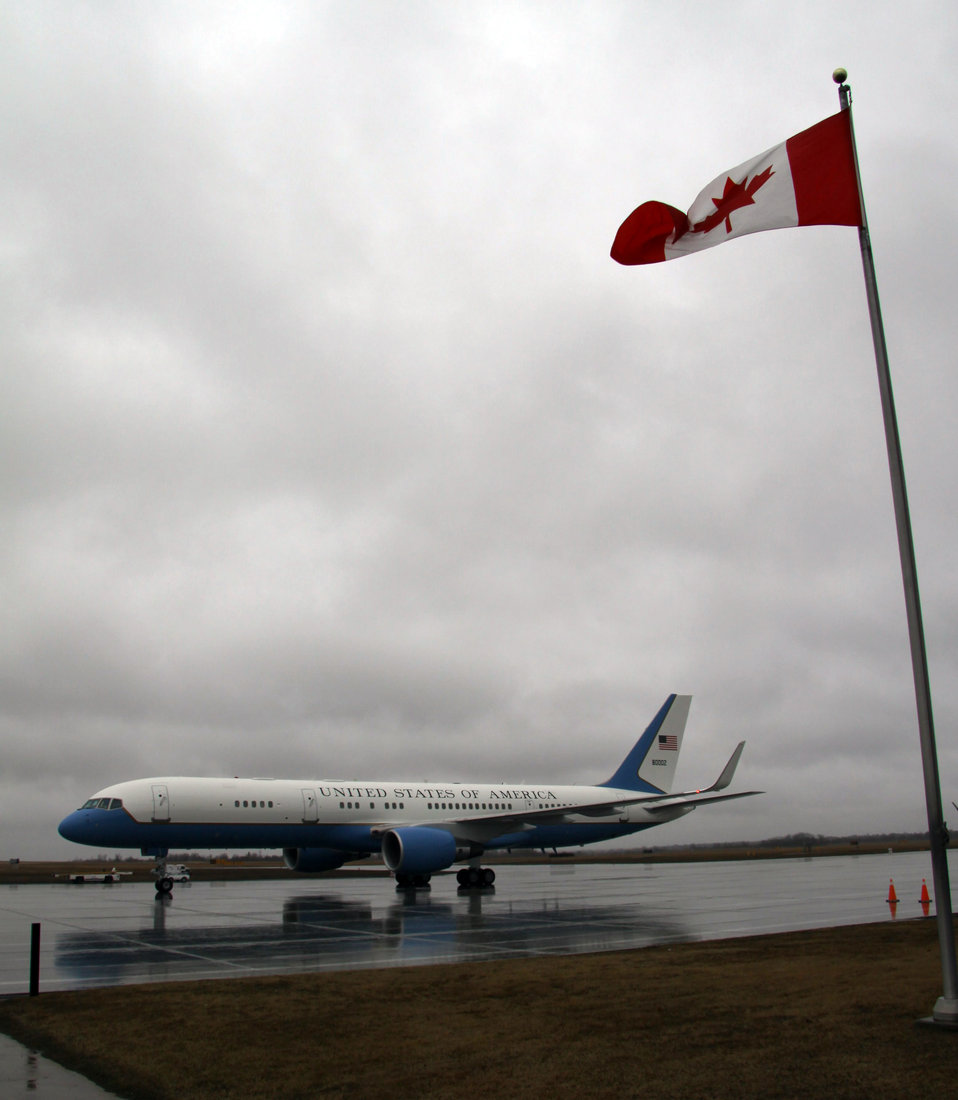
Secretary Clinton Arrives in Ottawa

U.S. Secretary of State Hillary Rodham Clinton arrives to the G8 Foreign Ministers Meeting in Ottawa, Canada March 29, 2010.